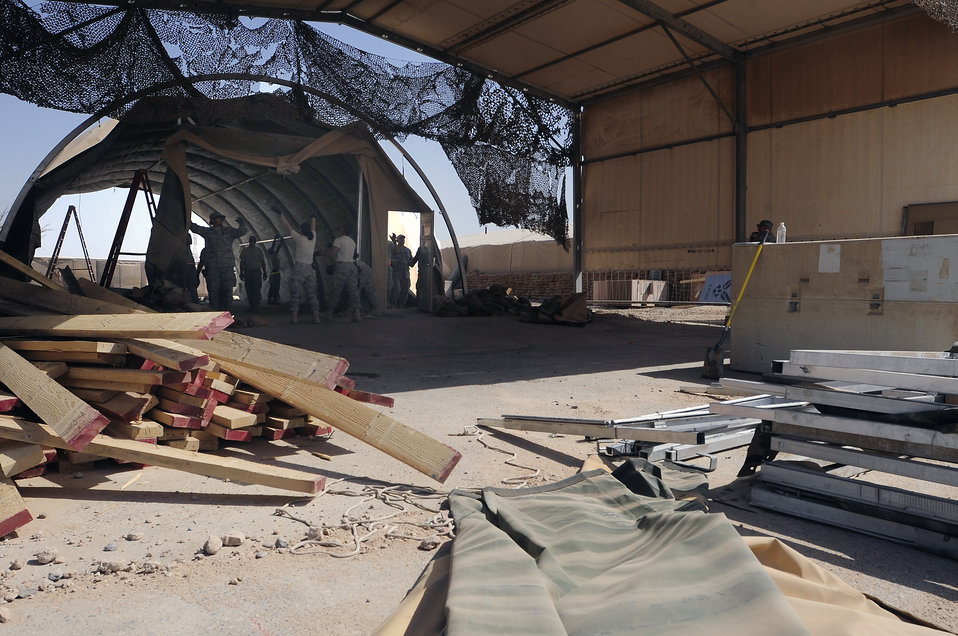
Reconstitution of materials supports fight, saves money

Members of the 407th Expeditionary Civil Engineer Squadron take down a tent structure Sept. 30, 2009, at Ali Base, Iraq. Squadron members are downsizing and consolidating material and equipment to send to U.S. warfighters in Afghanistan.